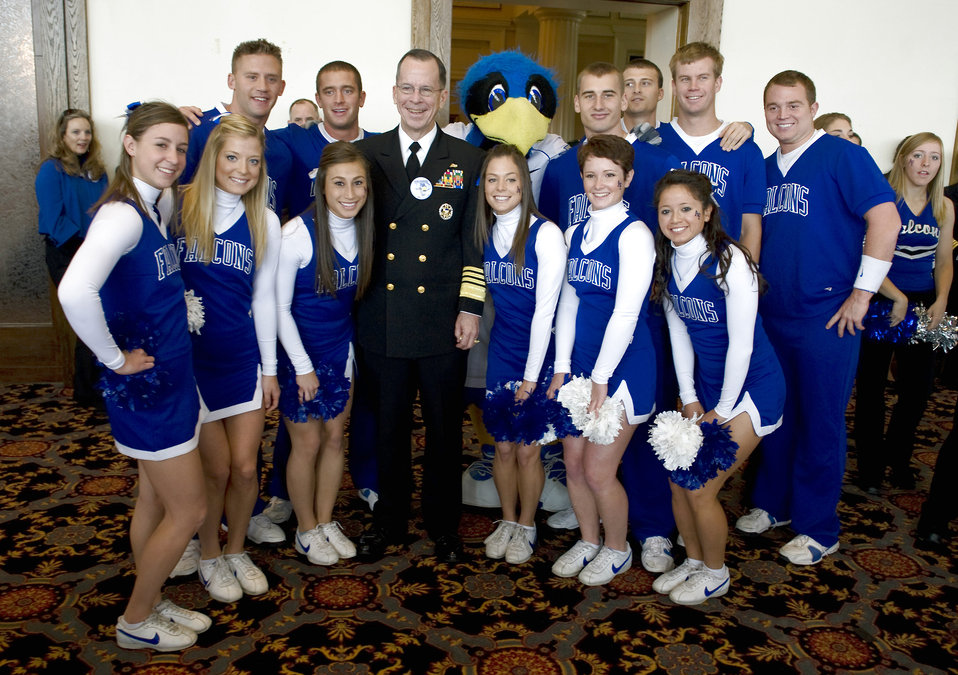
Football: Falcons top Army in slugfest

Navy Adm. Michael G. Mullen poses with the U.S. Air Force Academy cheerleaders at a tailgating party before the football game versus the U.S. Military Academy Black Knights Nov. 1 at West Point, N.Y. Admiral Mullen is the chairman of the Joint Chiefs of Staff.